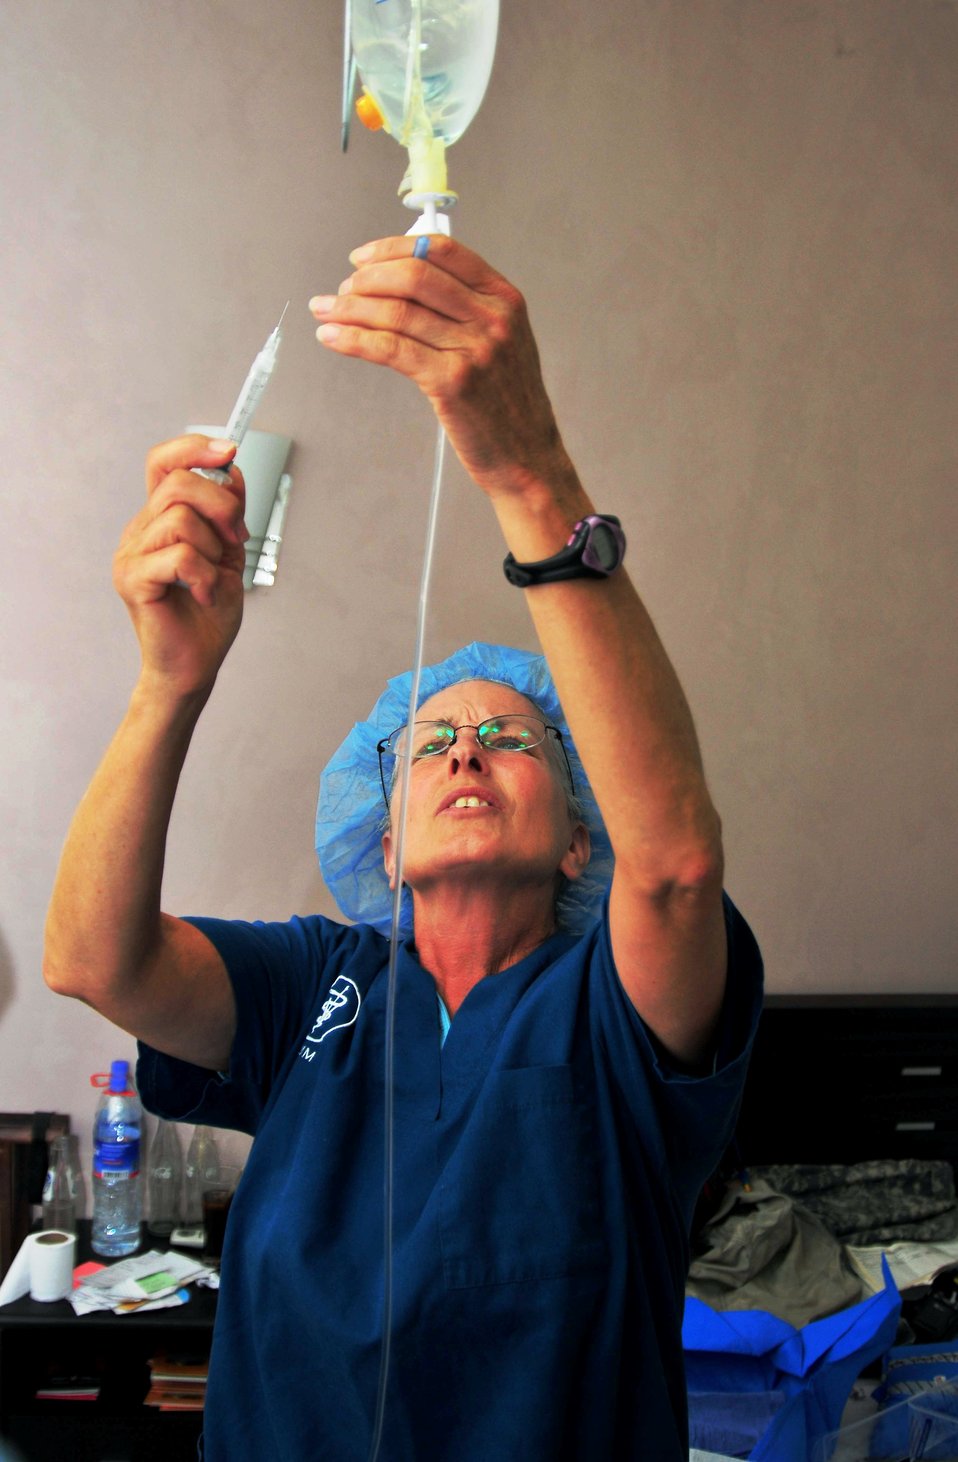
Vets Without Borders Veterinarian Dr. Louis Castalenelli Prepares an Intravenous Fluid Bag

Dr. Louis Castalenelli, a veterinarian from Vets Without Borders, prepares an intravenous fluid bag for a feline veterinary patient during a veterinarian community service event in support of Pacific Partnership 2010 on June 25, 2010, in Sihanoukville, Cambodia. The Military Sealift Command hospital ship USNS Mercy (T-AH 19) is in Cambodia conducting the fifth in a series of annual U.S. Pacific Fleet humanitarian and civic assistance endeavors to strengthen regional partnerships.